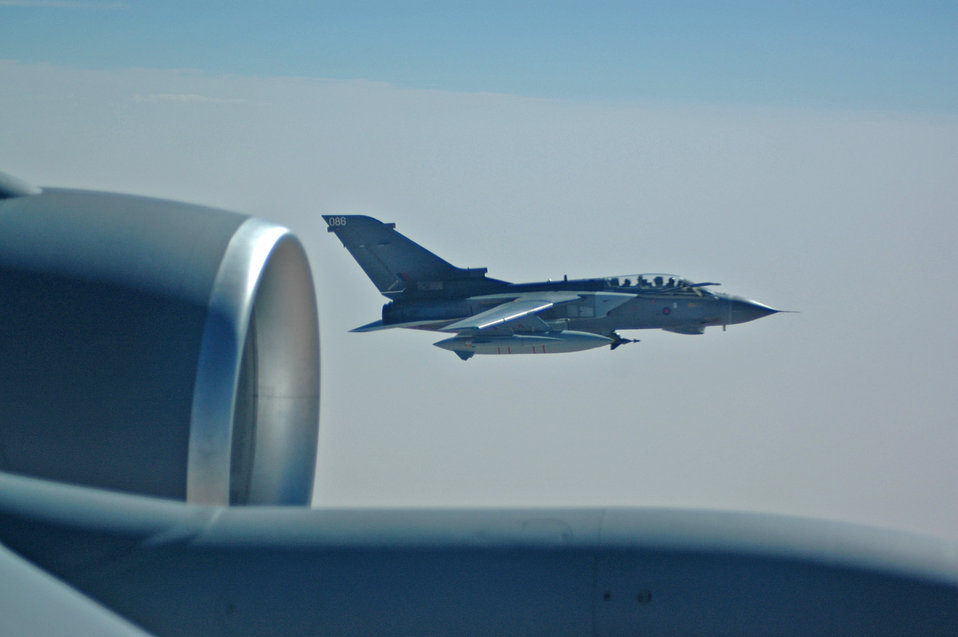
July 5 airpower summary

A Royal Air Force Tornado GR-4 flies alongside an Air Force KC-135R Stratotanker after an aerial refueling in Southwest Asia July 6. GR-4s fly sorties for both Operation Enduring and Iraqi Freedom. Coalition Stratotankers refuel more than 200 aircraft on a daily basis throughout the area of responsibility.